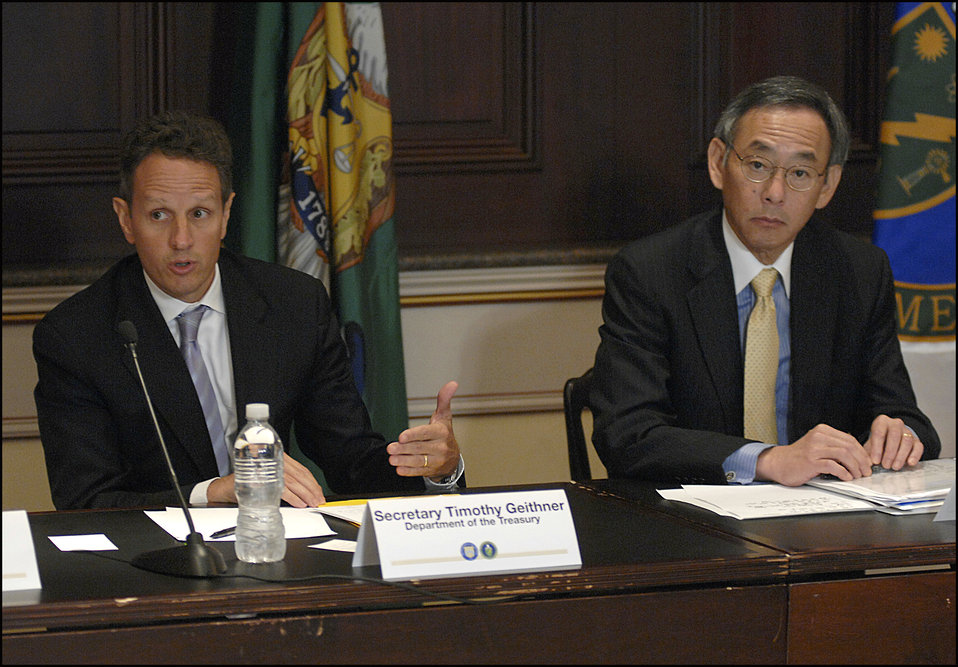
Roundtable056 1